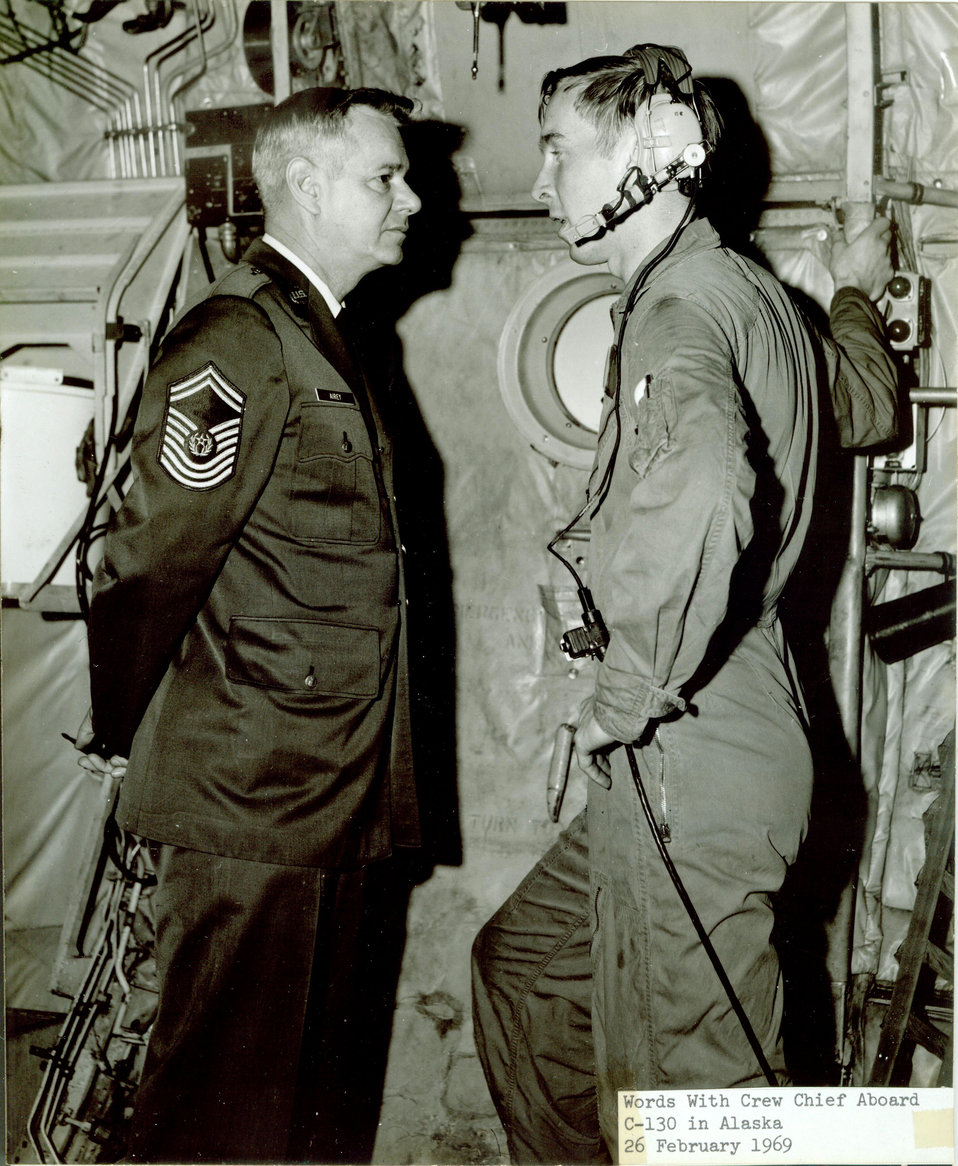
Enlisted perspective remembers the 'first'

Chief Master Sgt. Paul Airey was selected as the first chief master sergeant of the Air Force on April 3, 1967. During his tenure he visited many bases and talked with many Airmen about improving conditions for the enlisted force.